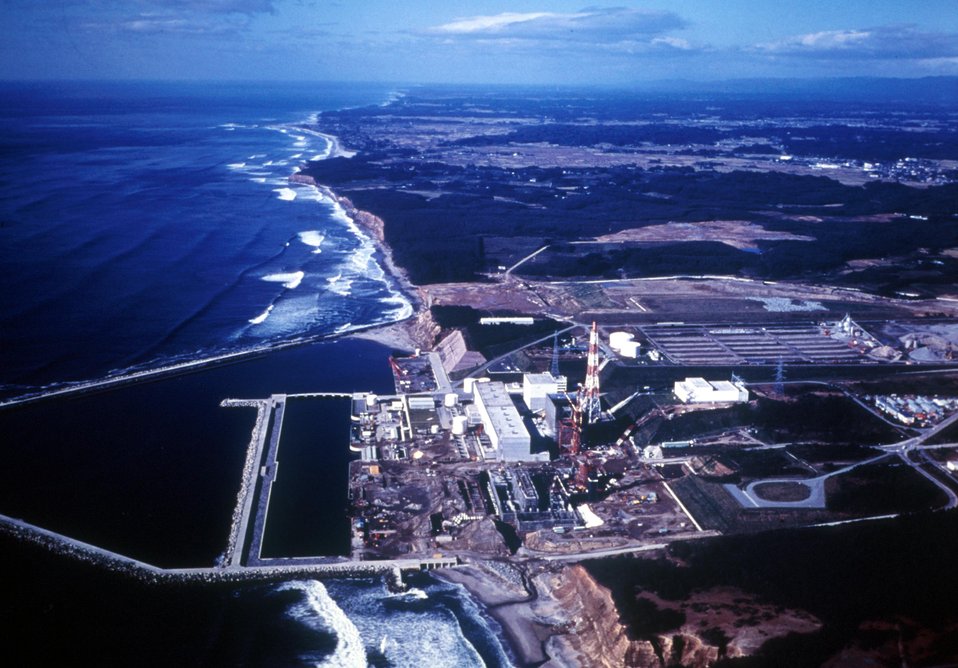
Tokyo Electric Power Co., Fukushina Nuclear Power Station on the Pacific Ocean, 160 miles North of Tokyo, 1.2 square mile site. Japan. c. 1971